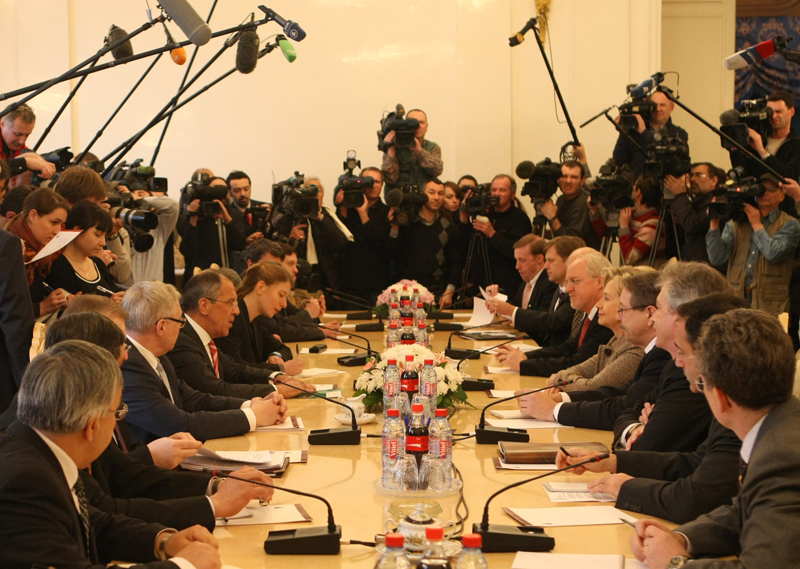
Secretary Clinton With Russian Foreign Minister Sergey Lavrov

U.S. Secretary of State Hillary Rodham Clinton meets with Russian Foreign Minister Sergey Lavrov in Moscow, Russia March 18, 2010.